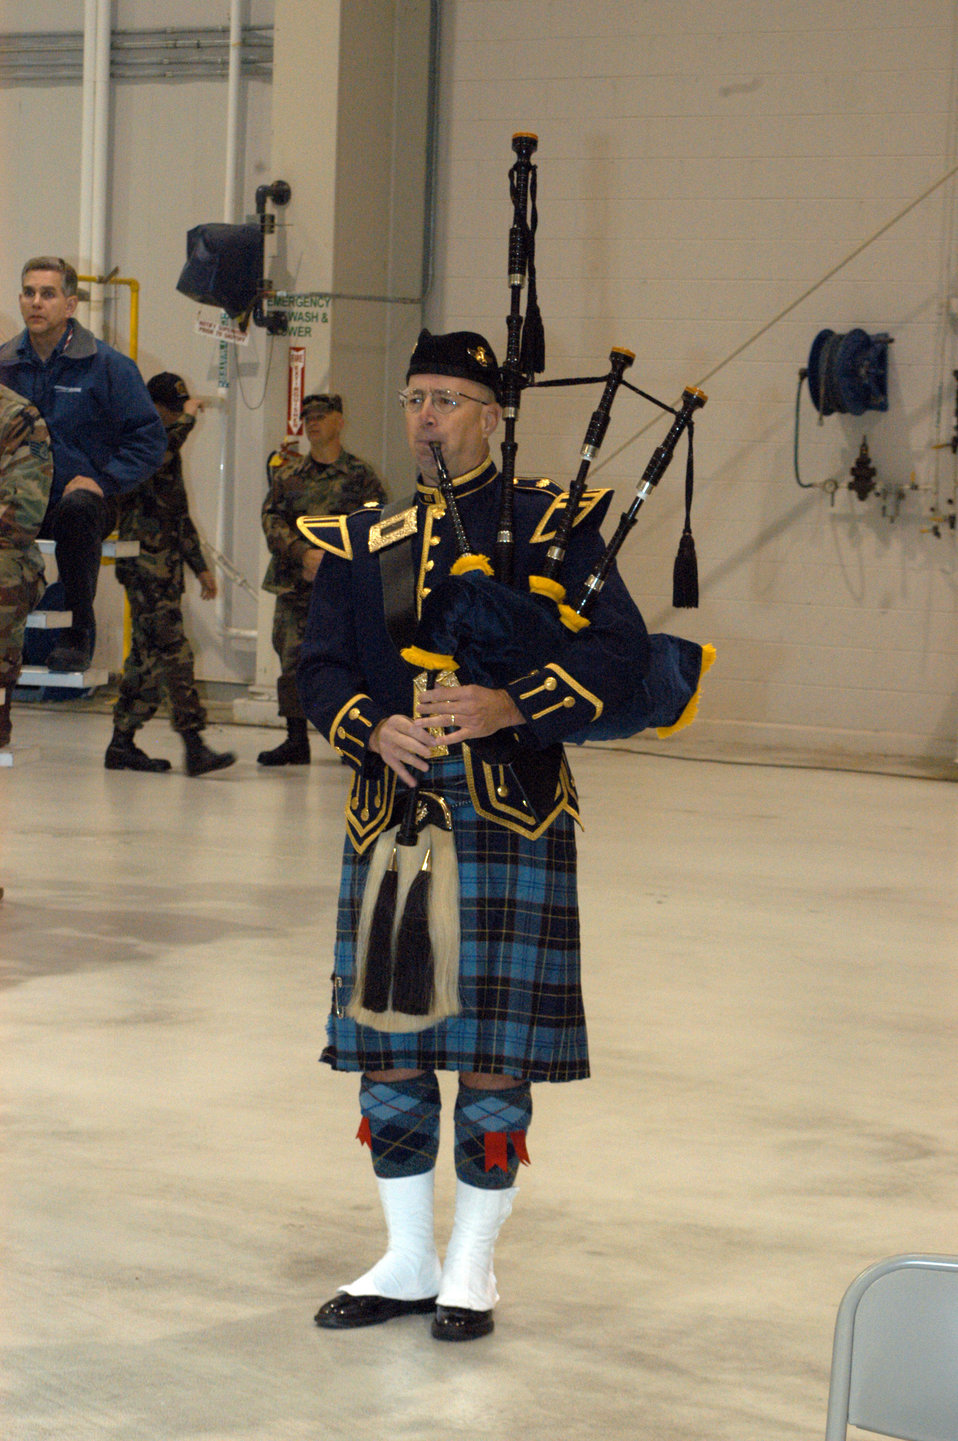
Joint Stars Airman plays bagpipes

ROBINS AIR FORCE BASE, Ga. (AFPN) -- Lt. Col. Skip Blumenthal plays the bagpipes at the 116th Air Control Wing change of command ceremony in October. He is wearing the official Air Force Reserve tartan uniform.